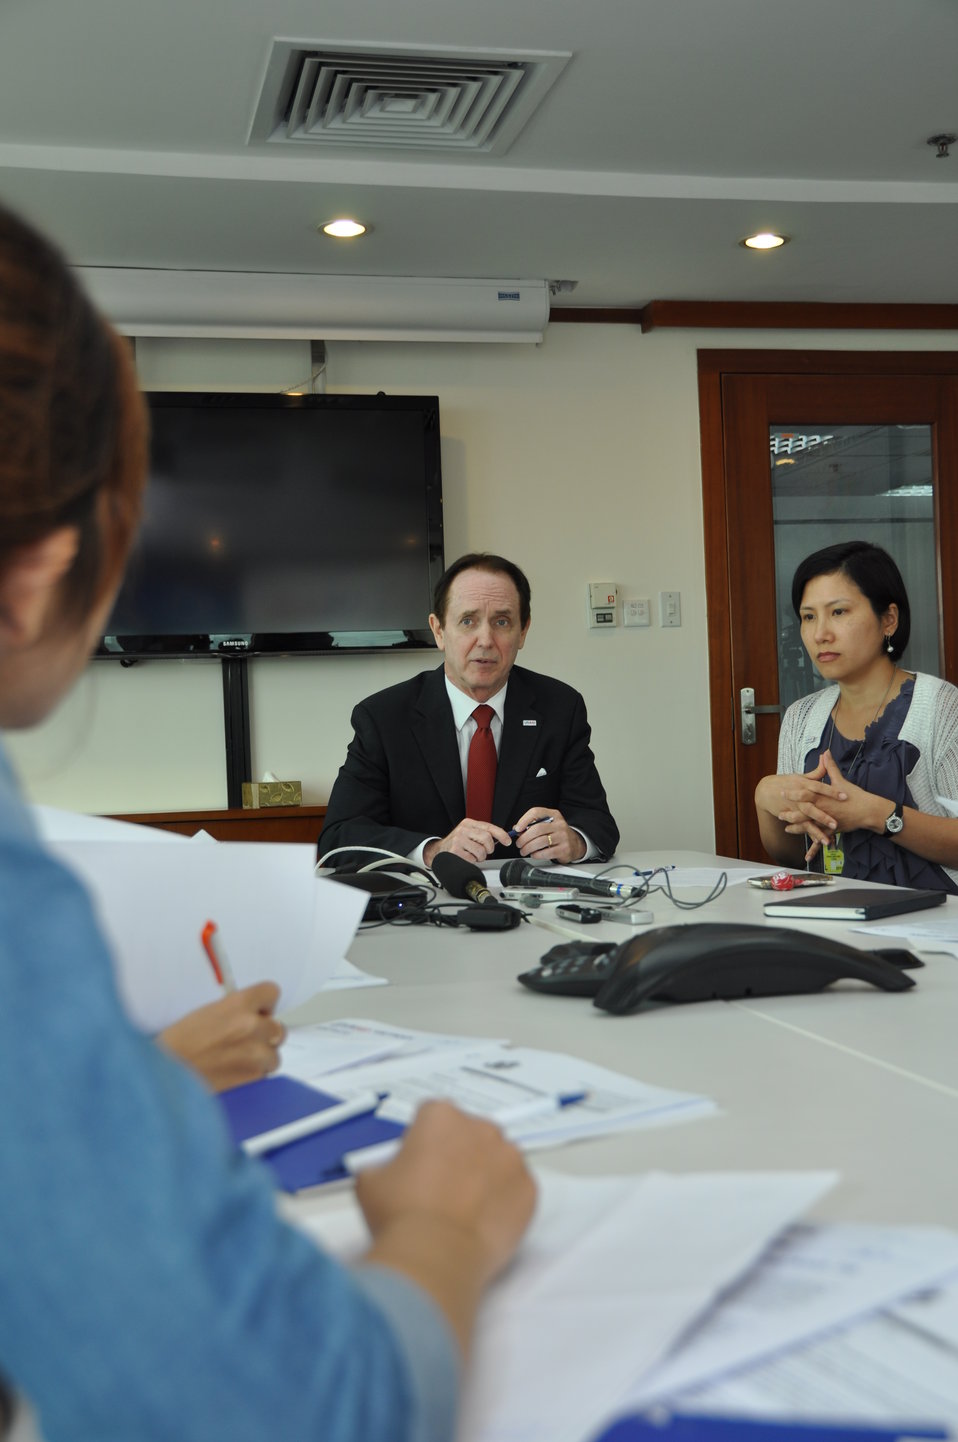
USAID Vietnam Open House, November 3, 2011